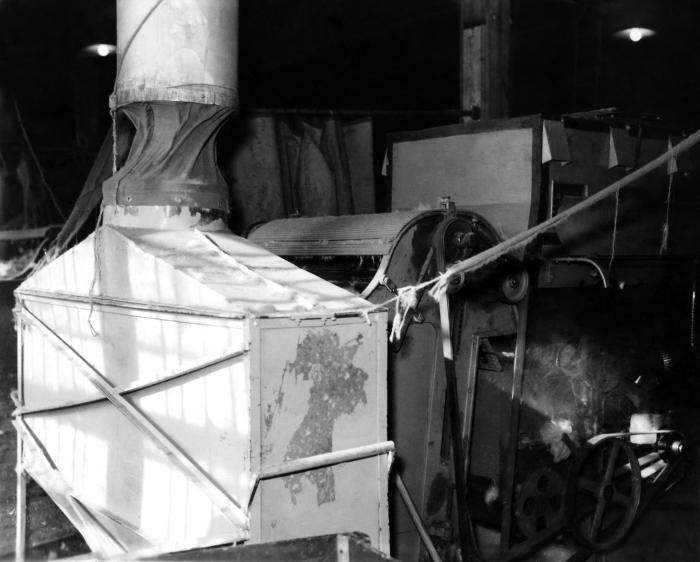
Provided by the Center for Disease Control's (CDC), National Institute for Occupational Safety and Health (NIOSH), this historic image, shot inside a Connecticut fur processing plant, depicted some of the machinery used in the manufacture of natural animal fur hats. Working with newly processed fur, which had been 'carroted', or fixed with mercury nitrate, workers could be exposed to airborne mercury, thereby, suffering the detrimental neurologic consequences from its inhalation. Using steam, which was integral to the hatters' industry, the airborne dissemination of this neurotoxic element was facilitated. Mercury exposure leads to heavy metal poisoning, with severe pathologic neurological consequences.